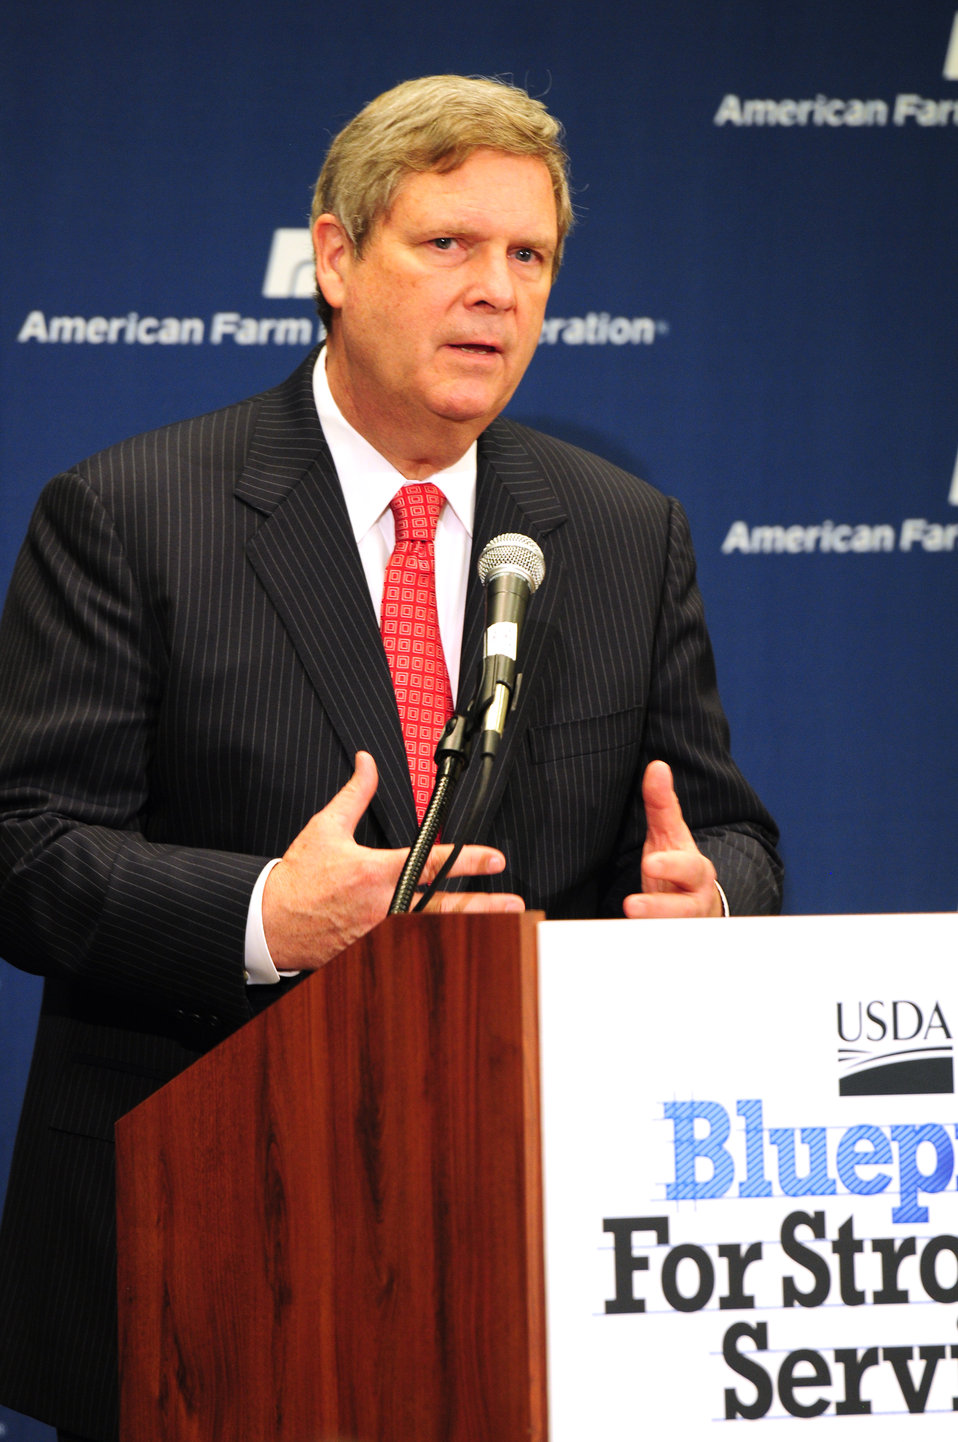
Agriculture Secretary Tom Vilsack presents USDA's Blueprint for Stronger Service, a plan to Increase Efficiency in USDA Operations, on Monday, January 9, 2012 in Honolulu, Hawaii.